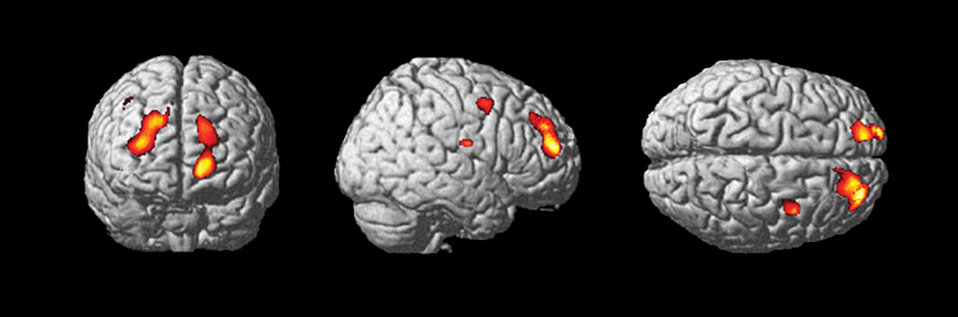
MRI

Methamphetamine reduces gray matter